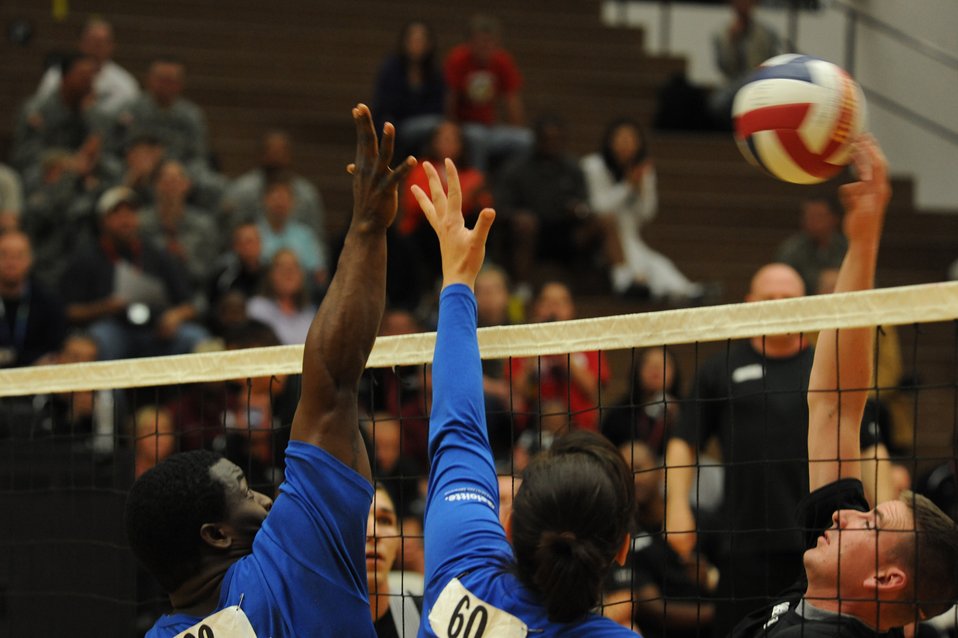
AF Volleyball wins Bronze at Warrior Games

Air Force Warrior Games athletes, Matt Sanders and Stacy Pearsall, block the ball during the Warrior Games sitting volleyball match against Army at the U.S. Olympic Training Center in Colorado Springs, Colo., May 13, 2010.